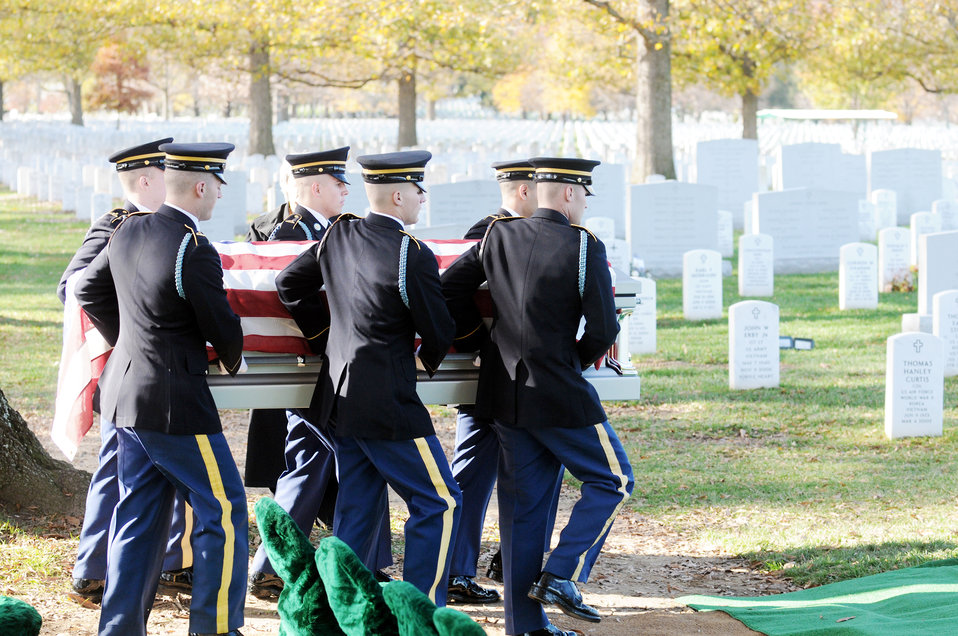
Funeral highlights search for missing servicemembers

Several military members carry the remains of a fallen servicemember of the World War II B-25 aircrew that was lost Dec. 5, 1942 near Papua, New Guinea, at Arlington National Cemetery in Virginia.